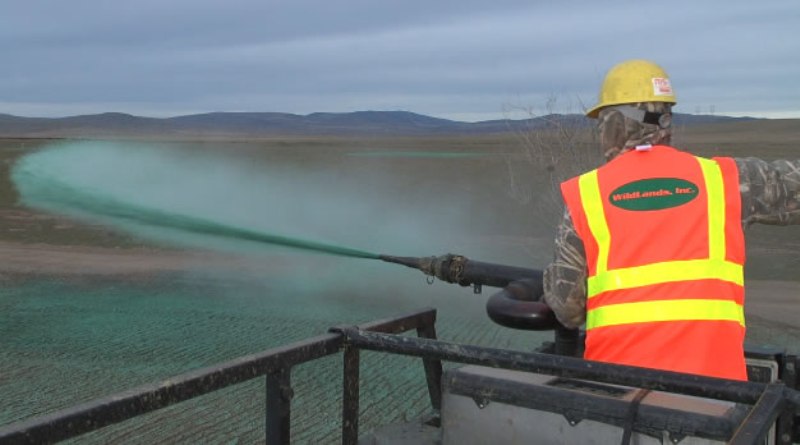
Recovery Act Workers Remediate and Restore Former Waste Sites

Recovery Act workers with CH2M HILL Plateau Remediation Company and subcontractors Wildlands Inc. and Ojeda Business Ventures LLC spray seeds across 140 acres of the BC Control Area waste site. In all, they planted about 1,000 pounds of seeds and about 280,000 pounds of mulch.